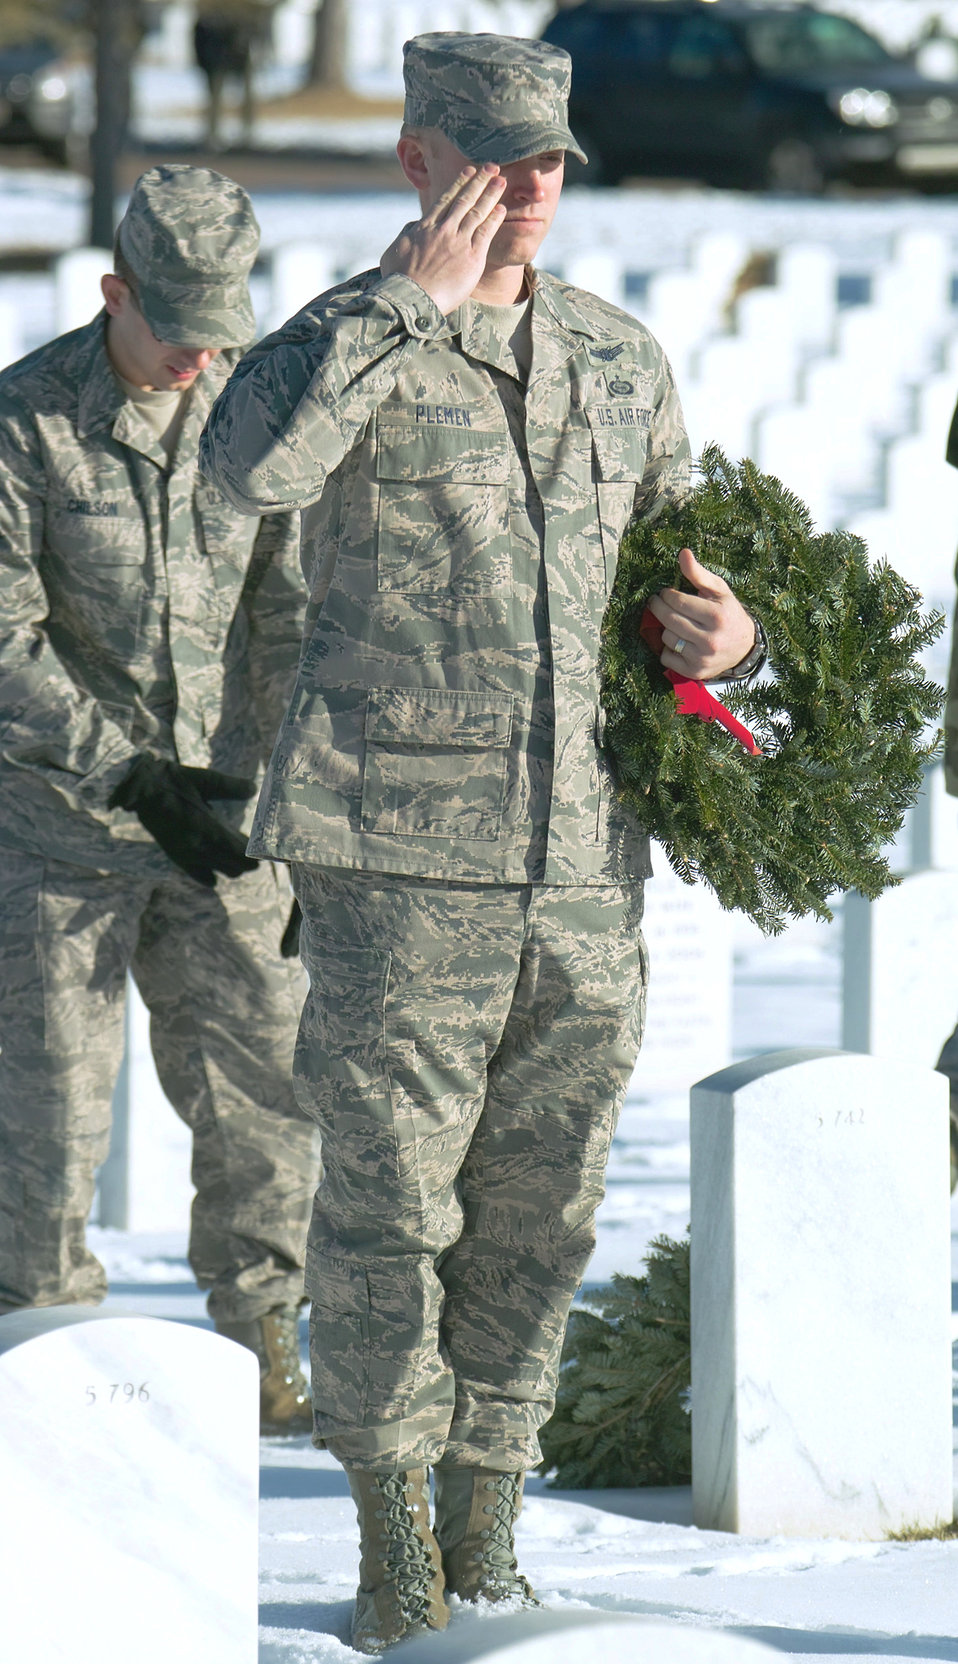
Airmen honor the fallen

Tech. Sgt. David Plemen salutes after laying a wreath during Wreaths Across America Dec. 14, 2009, at Fort Logan National Cemetery in Littleton, Colo. Sergeant Plemen is with the 566th Intelligence Squadron.